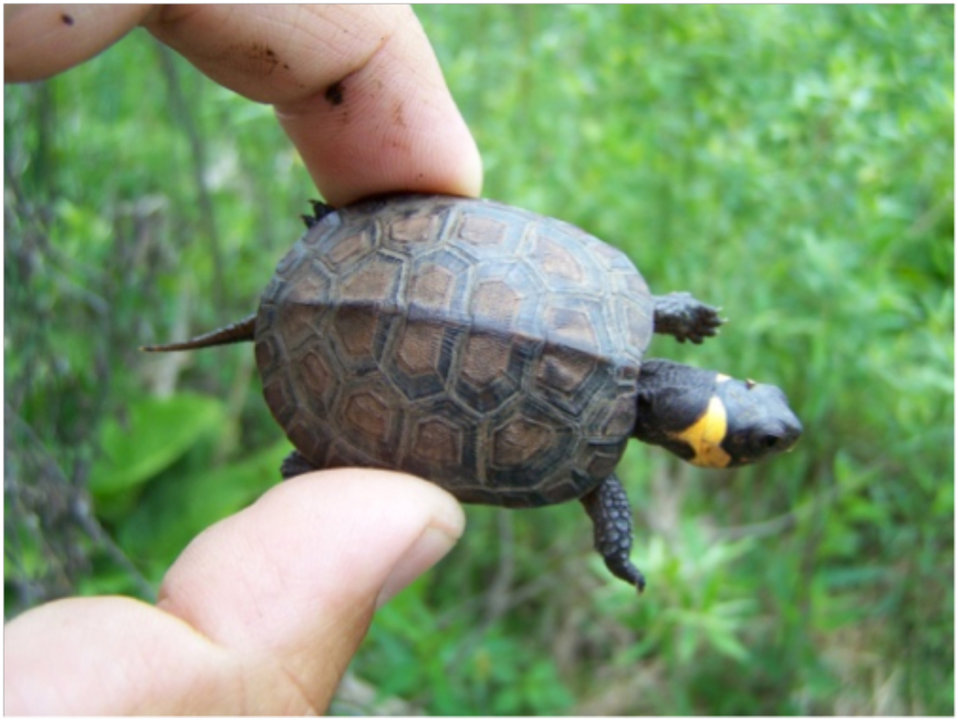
Species6

Bog turtles serve as a good indicator of clean water and healthy wetlands.